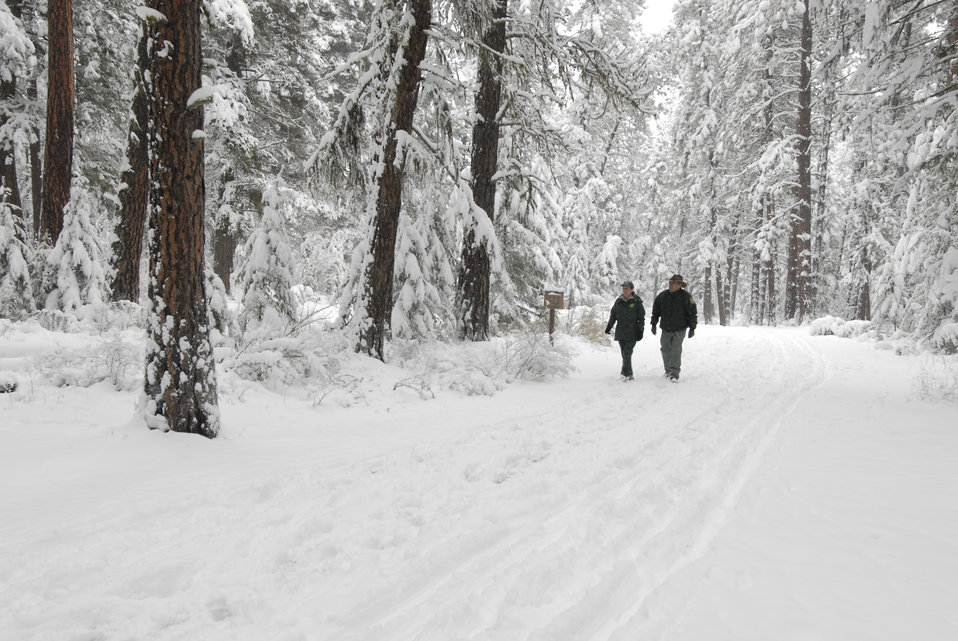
Two Forest Service rangers walk through the snow covered paths at Lolo National Forest in Montana on November 22, 2007. Lolo National Forest is located in west central Montana and encompasses two million acres.